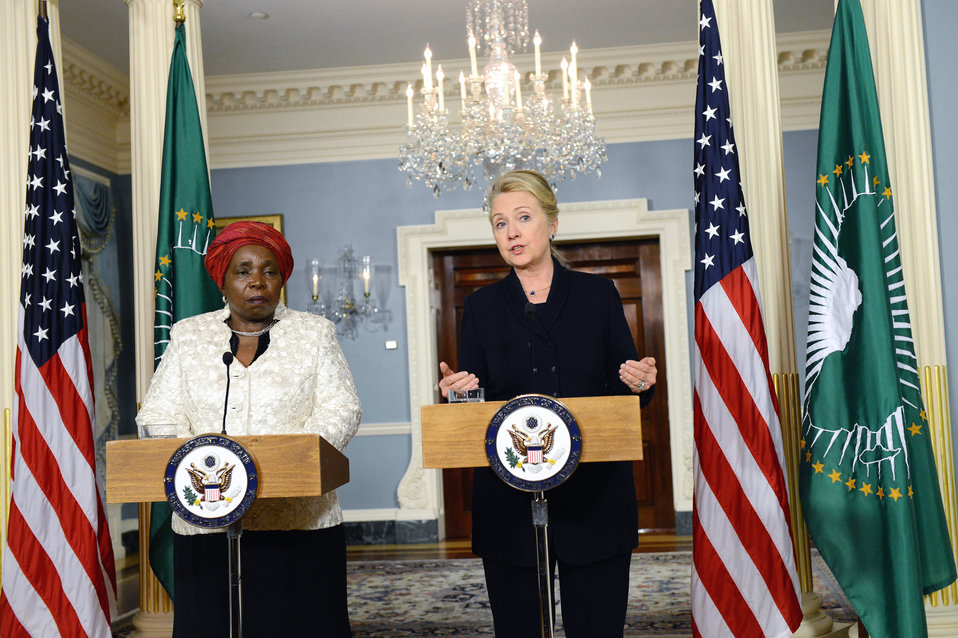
Secretary Clinton and African Union Chairperson Dlamini-Zuma Address Reporters

U.S. Secretary of State Hillary Rodham Clinton holds a joint press conference with African Union Chairperson Nkosazana Dlamini-Zuma at the U.S. Department of State in Washington, D.C., November 28, 2012.